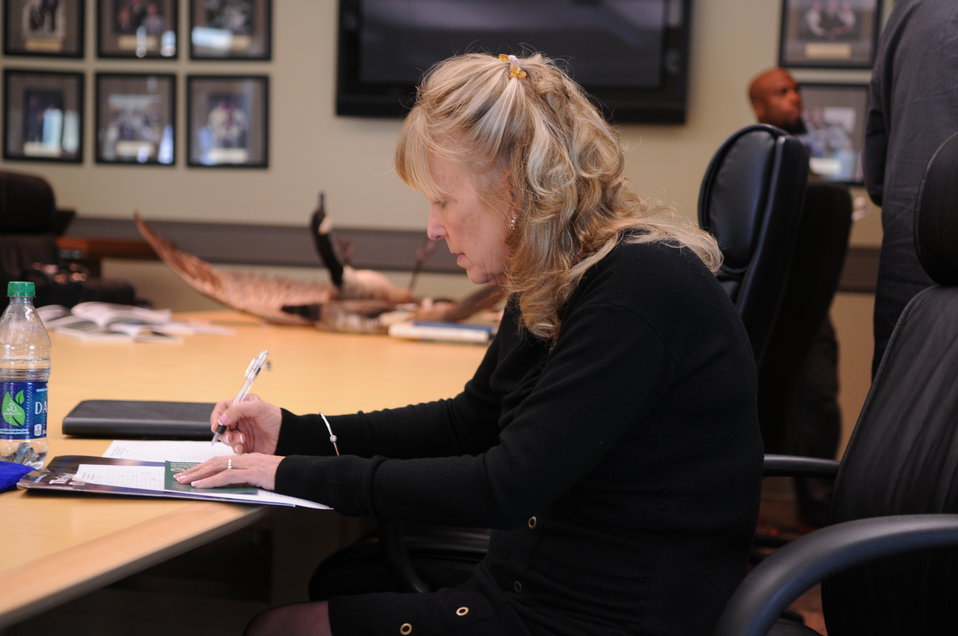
Judging

The U.S. Fish & Wildlife Service sponsored the 2012 Federal Duck Stamp Art Contest September 28 and 29 in Ogden, Utah, at Weber State University. A panel of five judges was responsible for choosing the art work used to design the 2013-2014 Migratory Bird Hunting and Conservation Stamp.